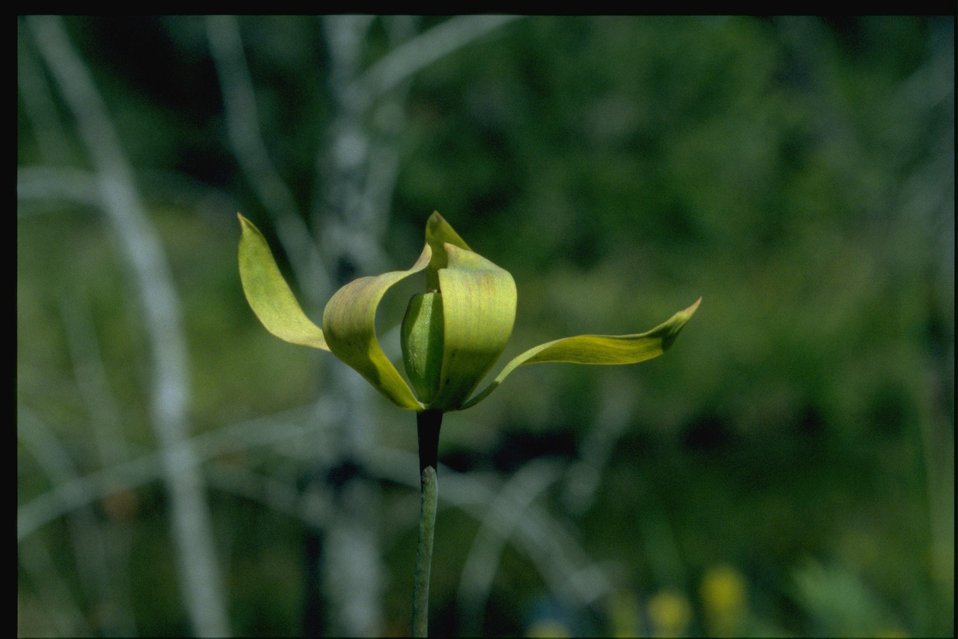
Medium shot of Cobra Lily flower, Darlingtonia californica.